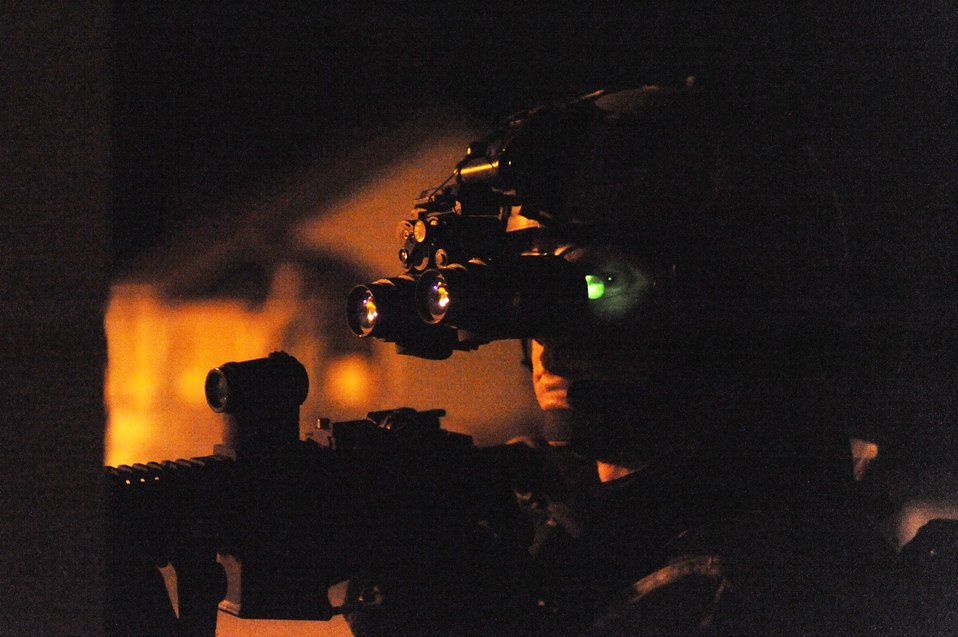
You can't hide

A pararescueman provides security during an Exercise Patriot Archangel tactical rescue scenario Oct. 24, 2009, at an undisclosed location in the U.S. The exercise hones Guardian Angel combat operations in